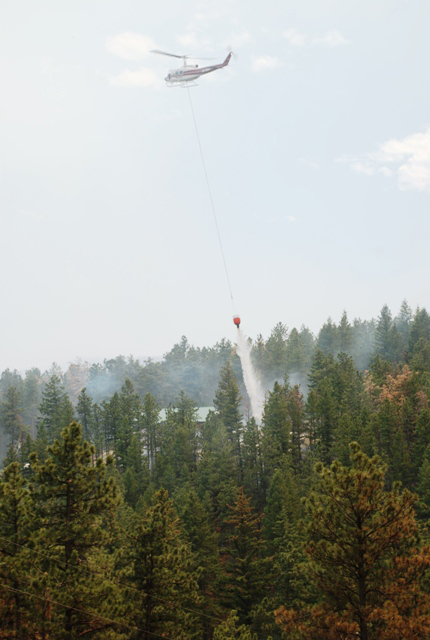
A helicopter drops water on the High Park Wildfire on the Arapaho and Roosevelt National Forests and Pawnee National Grassland on Thursday, June 10, 2012. The High Park Wildfire located approximately 15 miles west of Fort Collins, CO has consumed over 65,738 acres of forest and grassland with approximately 189 homes destroyed. Over 1,773 personnel from the U.S. Forest Service (FS), state and local resources are fighting the wildfire and have achieved 55% containment as of June 20, 2012. The High Park Wildfire began on June 9. 2012 because of a lightening strike on private land.